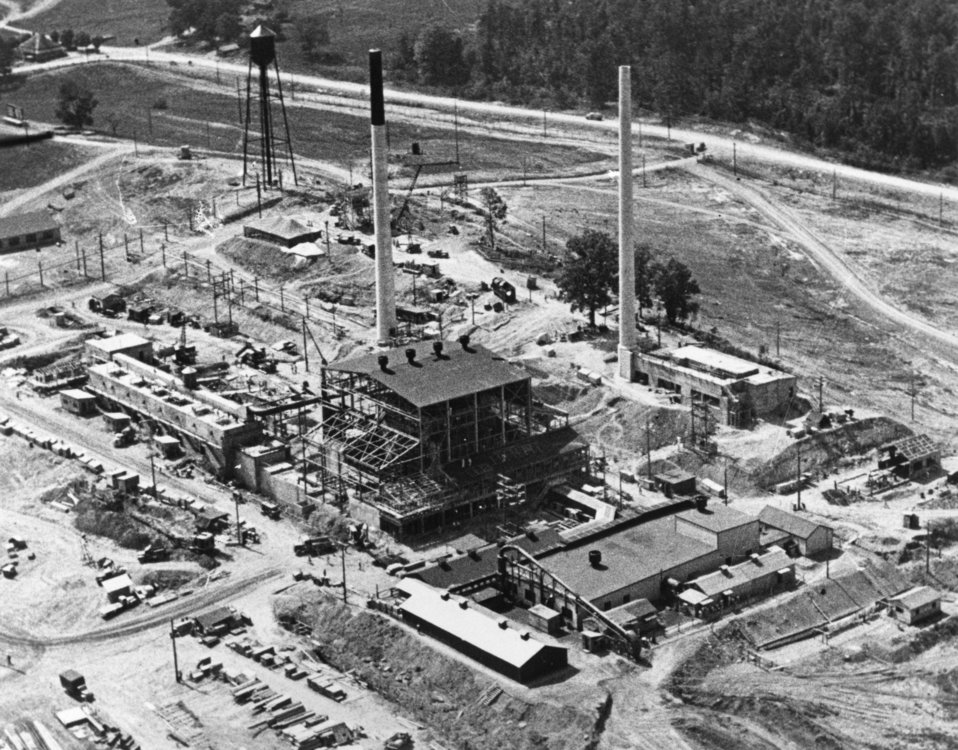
X-10 at Oak Ridge